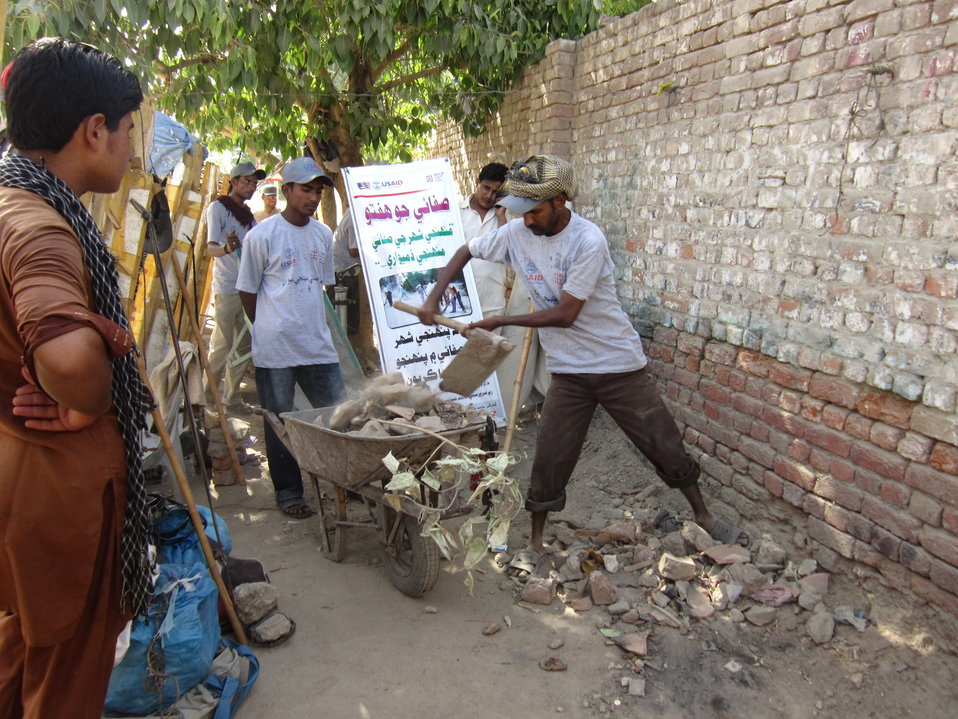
Caption 6 - DevCon - Shahdadpur - Hafta Safai 2

Volunteers and staff members of the Taluqa Municipal Administration (TMA) can be seen actively cleaning the neighborhood during a week-long cleaning drive in Shahdadpur, district Sanghar, Sindh. The drive was a part of a project on municipal oversight in the said taluqa (township), being implemented by DevCon under USAID’s Citizens’ Voice Project.